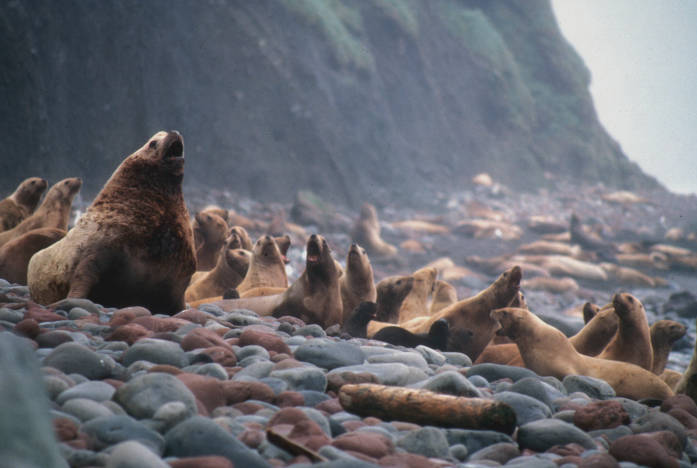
Steller sea lions

Alaska Maritime National Wildlife Refuge